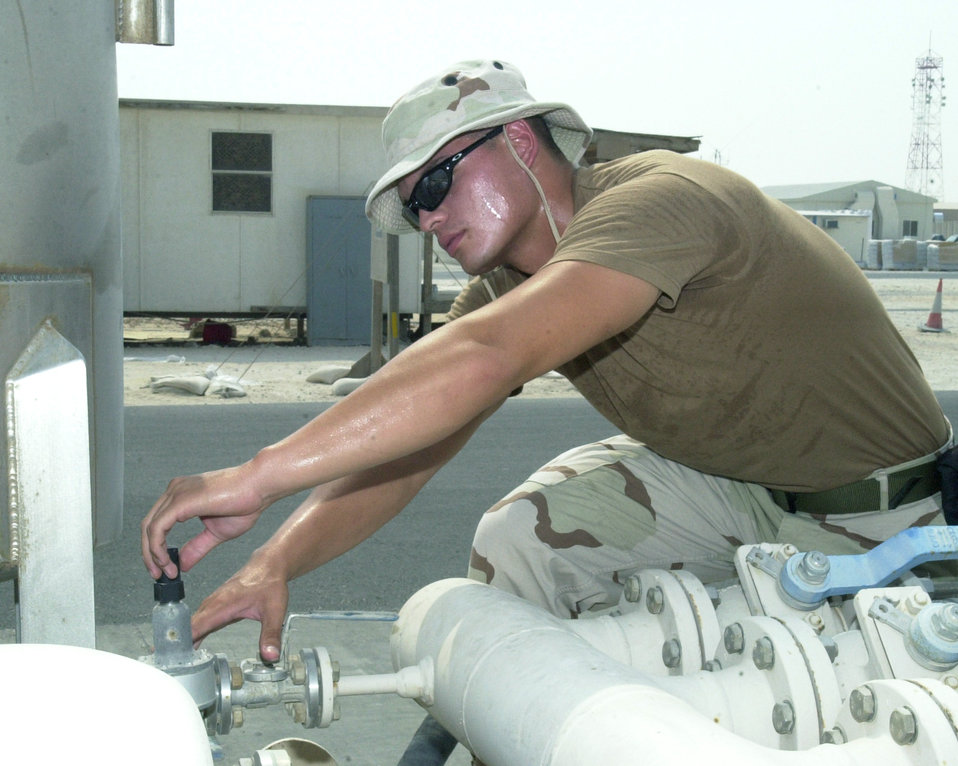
Under pressure

SOUTHWEST ASIA -- Senior Airman Cesar Munoz adjusts the pressure regulator for the base's fuel tanks at a forward-deployed location. Airman Munoz is on his first Air Force deployment and became a father in July. Despite being away, he was able to see his newborn son through an Air Force video phone connection. He is deployed from the 1st Civil Engineer Squadron at Langley Air Force Base, Va.